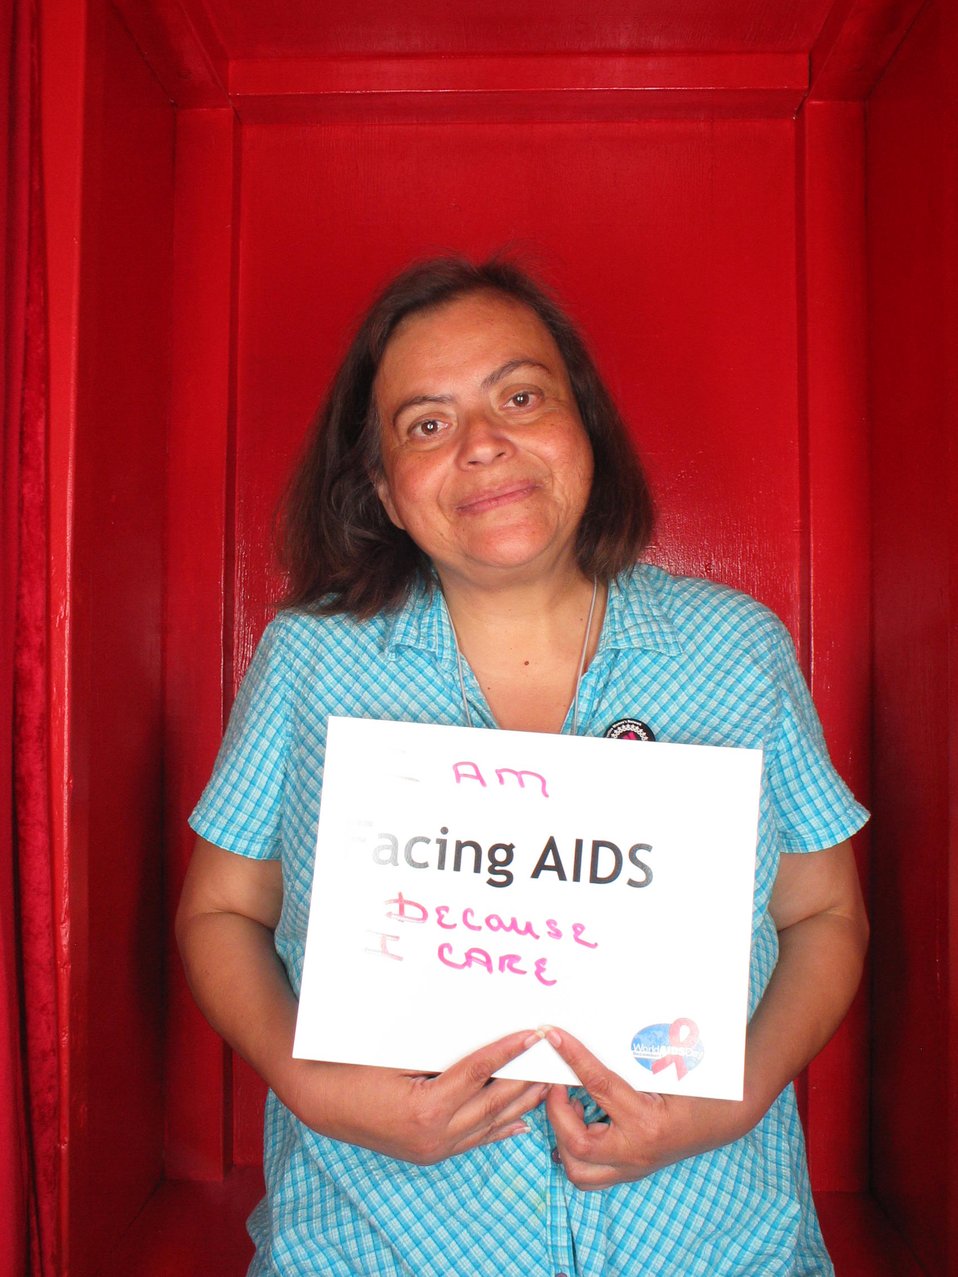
I am Facing AIDS because I care.